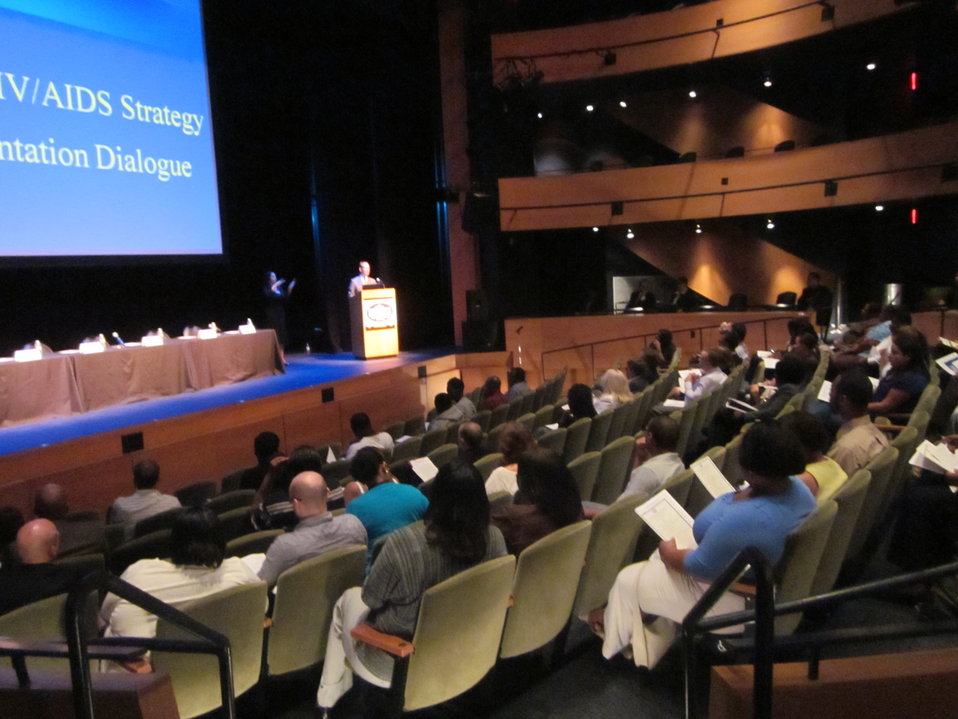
Baton Rouge Pics 021